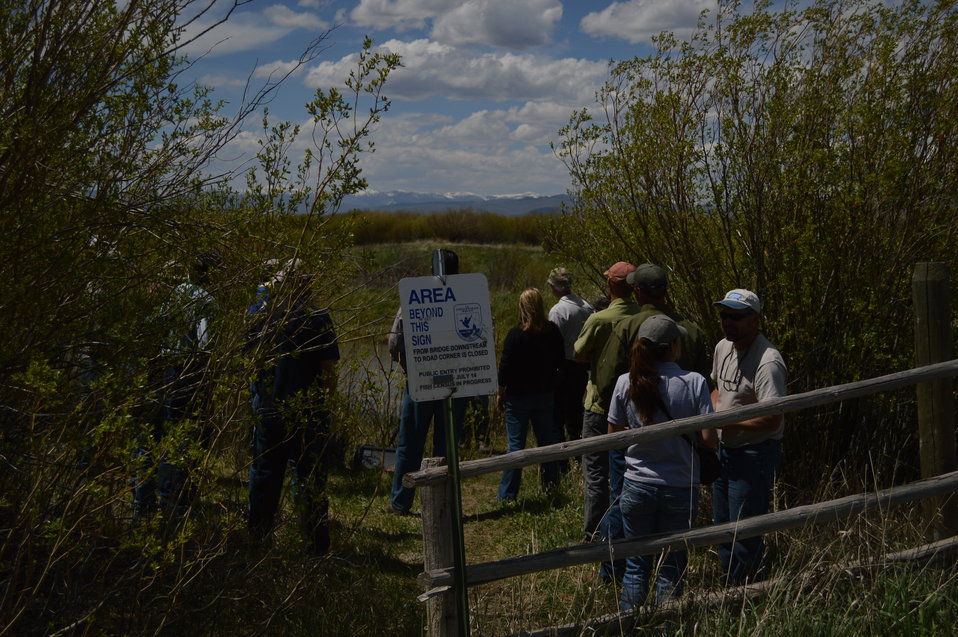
Regional Leadership Visit to Montana 2014